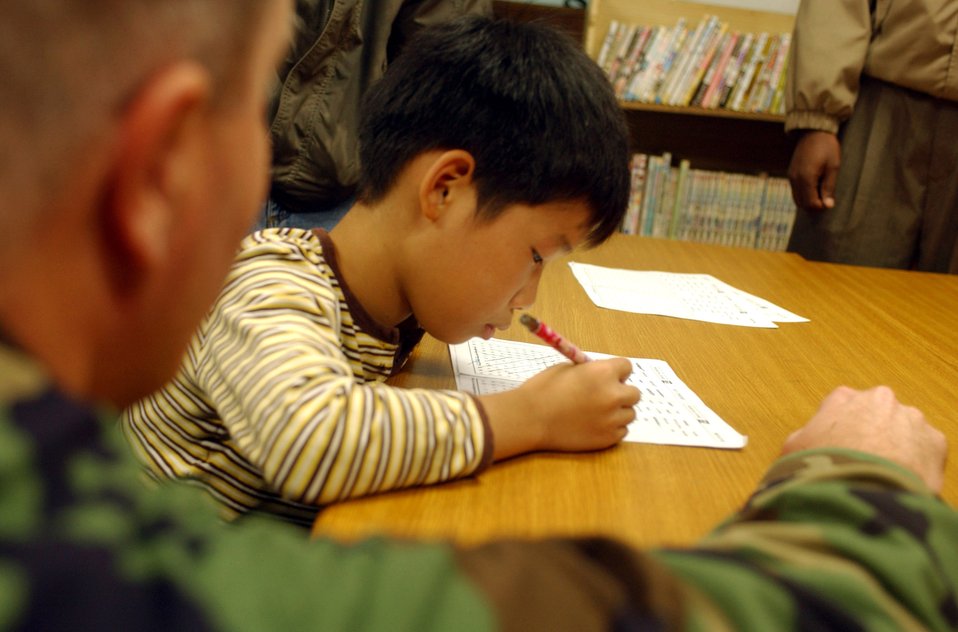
Good neighbors

A child searches for a word during his English class as Chaplain (Maj.) Richard Fitzgerald assists at the Gunsan Orphanage Sept. 5 at Gunsan City, South Korea. Members of the 8th Logistics Readiness Squadron volunteered at the Kunsan Air Base Commissary in South Korea to raise money for the children at the Gunsan Orphanage as part of a Good Neighbor Program initiative. After presenting the money, they spent time with the children. Chaplain Fitzgerald is an 8th Fighter Wing chaplain.